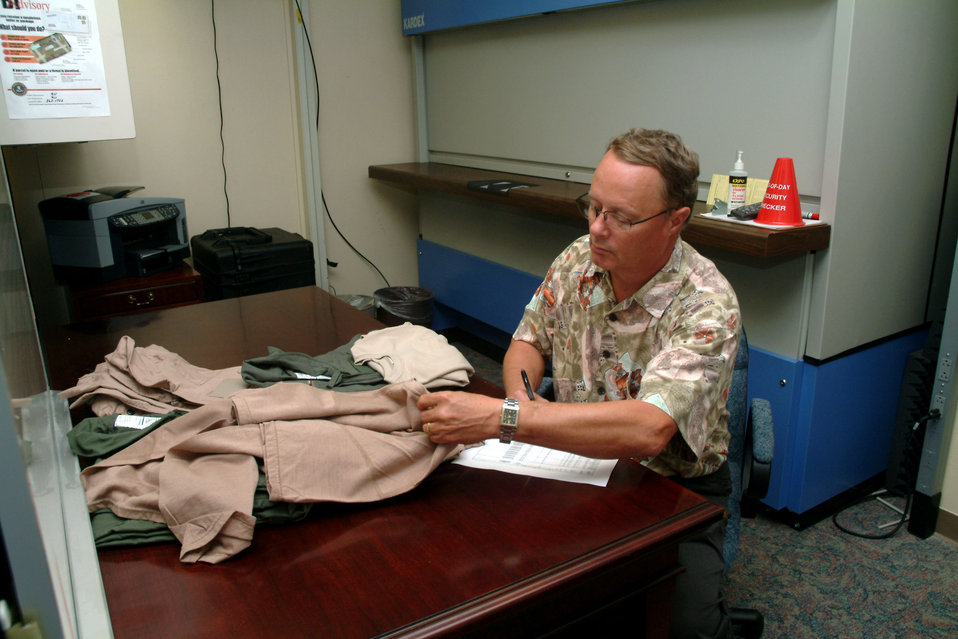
Airmen test new Air Force flight suits, T-shirts

Danny Keith assigns a batch of the new flight suits and T-shirt prototypes to one of the volunteers participating in the operational utility evaluation. The uniform prototypes are being tested through Nov 1. Mr. Keith is assigned to the 28th Test and Evaluation Squadron aircrew life support division at Eglin Air Force Base, Fla.